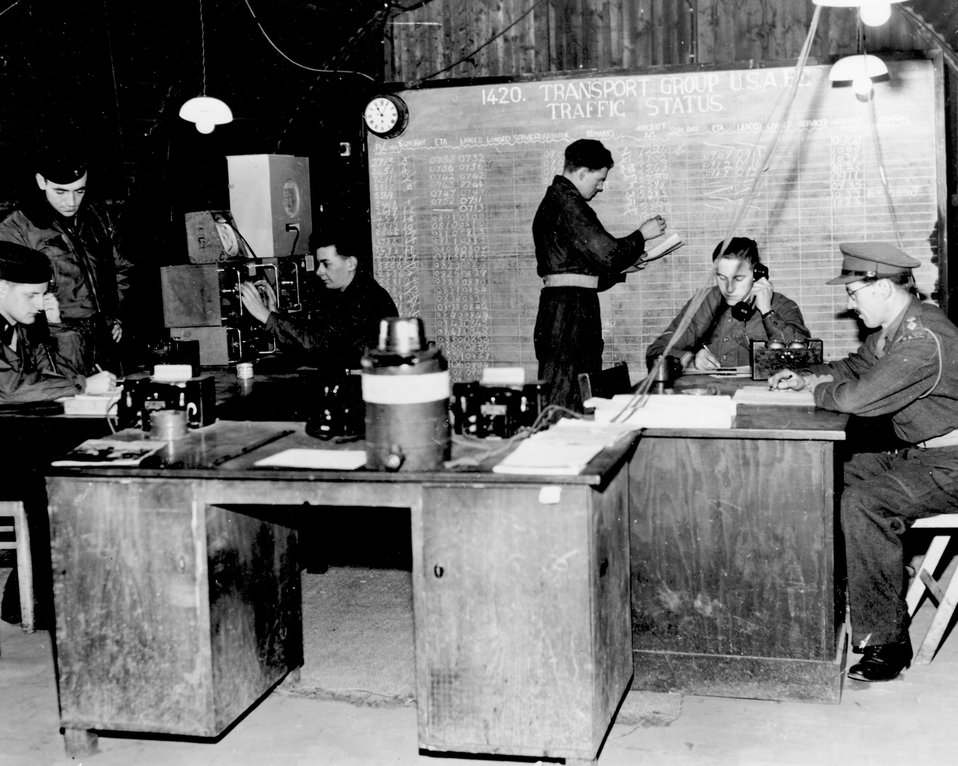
Senate recognizes Berlin Airlift anniversary

Radio calls from incoming aircraft were monitored by personnel at the traffic control point during the Berlin Airlift in 1948. The traffic control point used this information to help facilitate loading operations. Pictured are from Left to right: Lt. Howard L. Pruden, Lt. Ralph A. Lerch, Driver Peter K. Davis, Driver James Anderson, Lance Cpl. Horton Albert, Capt. Donald Barker.